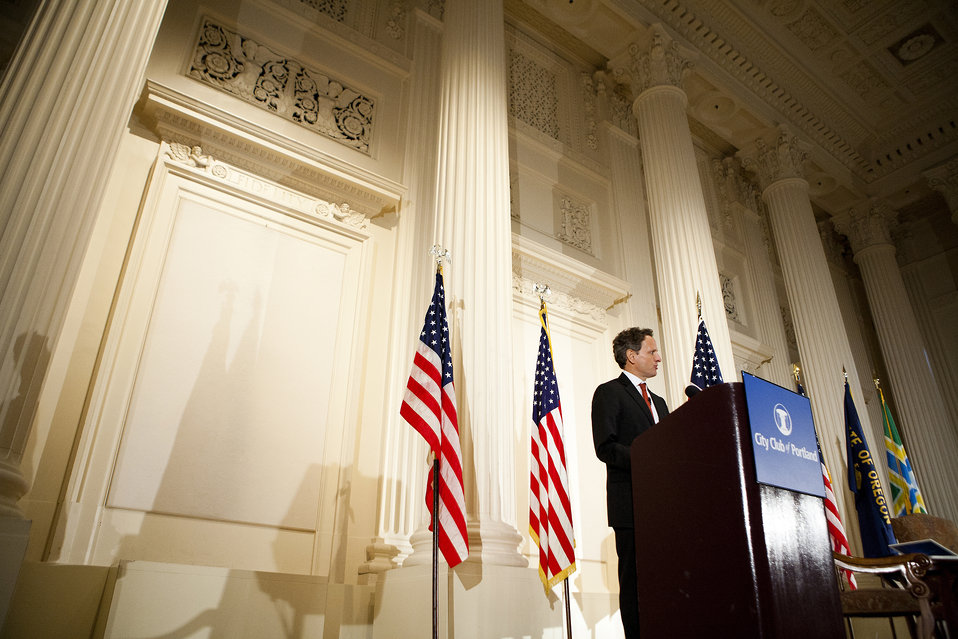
Secretary Geithner Speaks at the Portland City Club

In his remarks at the Portland City Club, Treasury Secretary Tim Geithner outlined the primary economic imperatives facing the country and reviewed the Administration’s efforts to support economic growth in the short term, put in place the right investments and reforms for our future, and restore fiscal sustainability under a balanced approach.